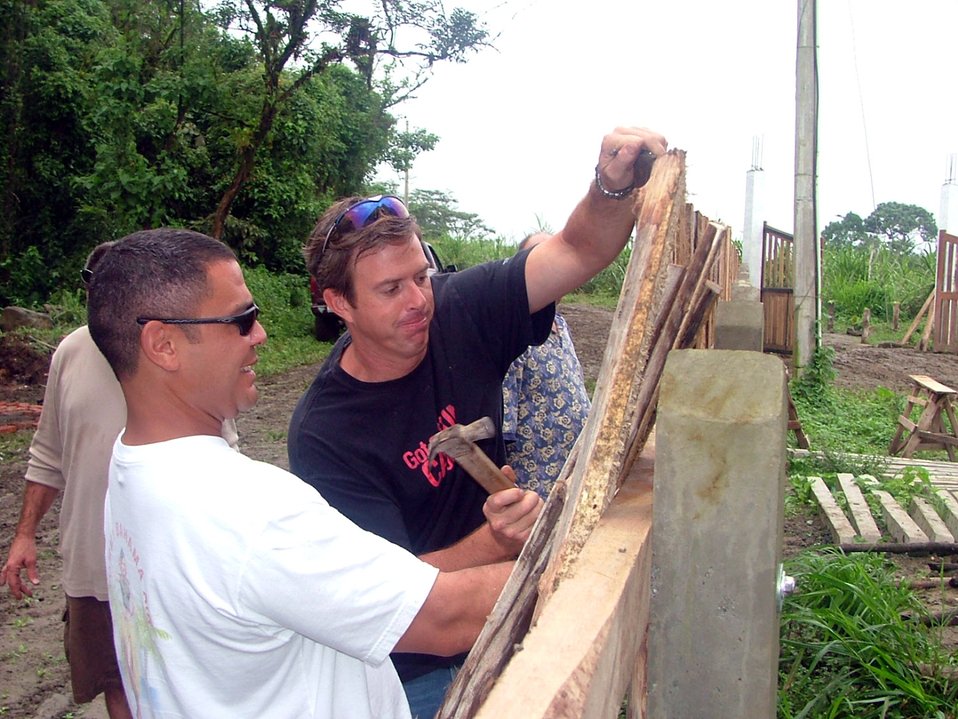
Airman support local community at Manta FOL

Maj. Scott Griesman (left) and Capt.Ernie Meeks work together, along with the other volunteers from Forward Operating Location Manta in Ecuador to build a fence at the Montanita Verde Orphanage. Airmen from Manta volunteer to undertake a variety of projects in the local community.